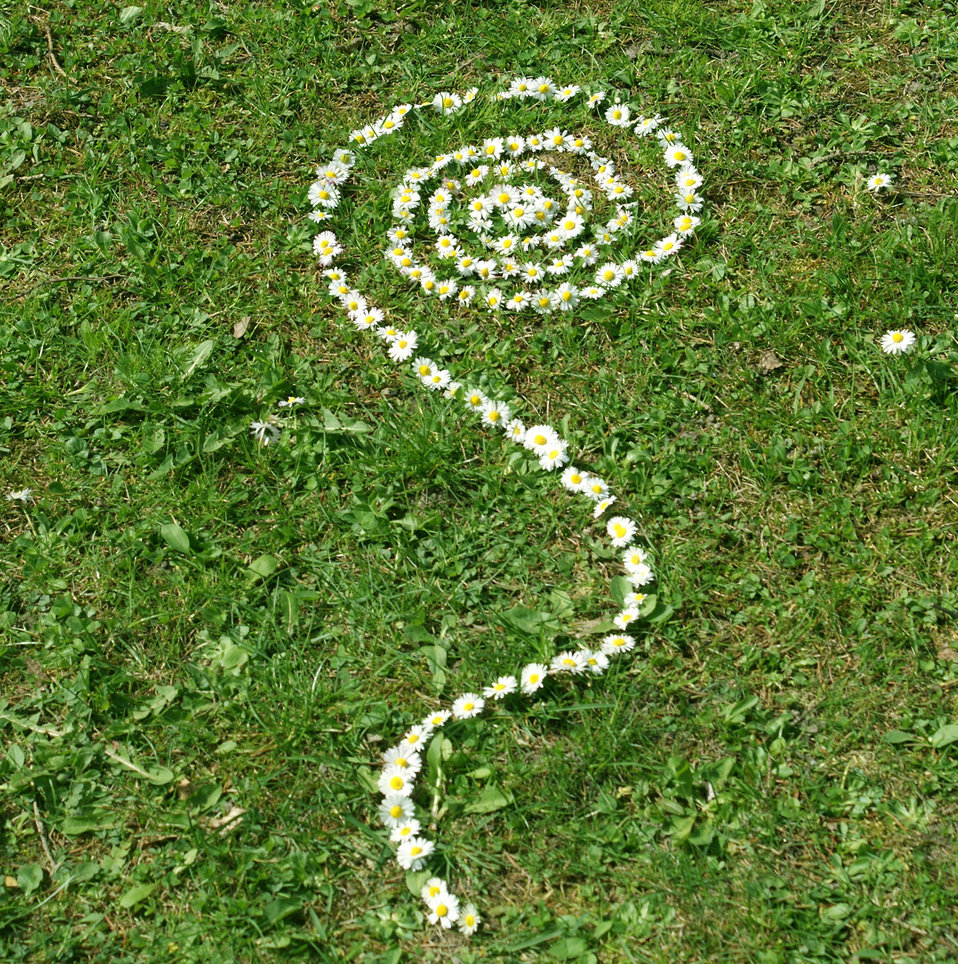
Spring

Daisies arranged in the grass.